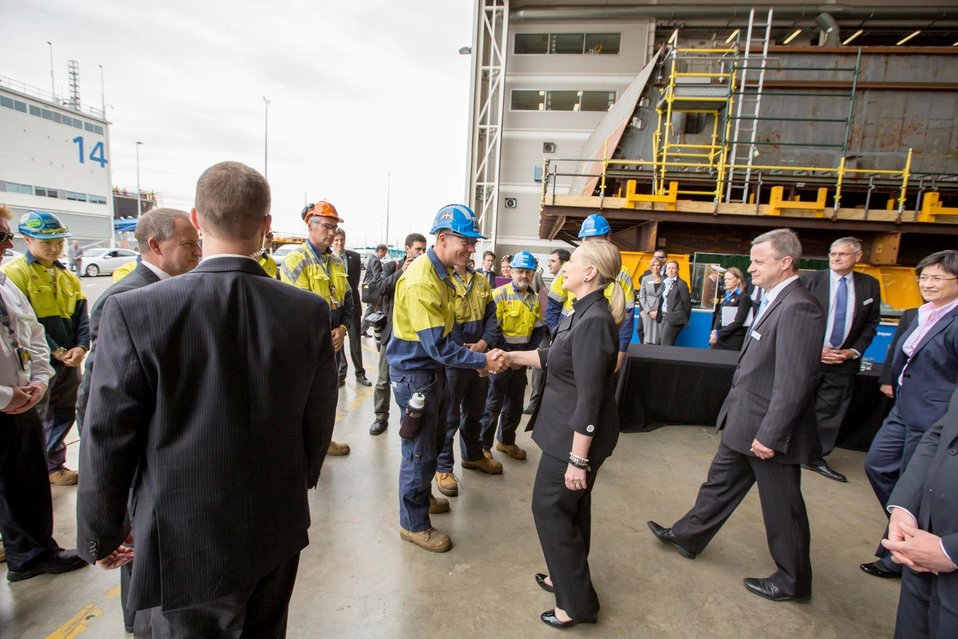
Secretary Clinton Meets With Workers from TechPort

U.S. Secretary of State Hillary Rodham Clinton shakes hands with workers from TechPort in Adelaide, Australia, November 15, 2012.